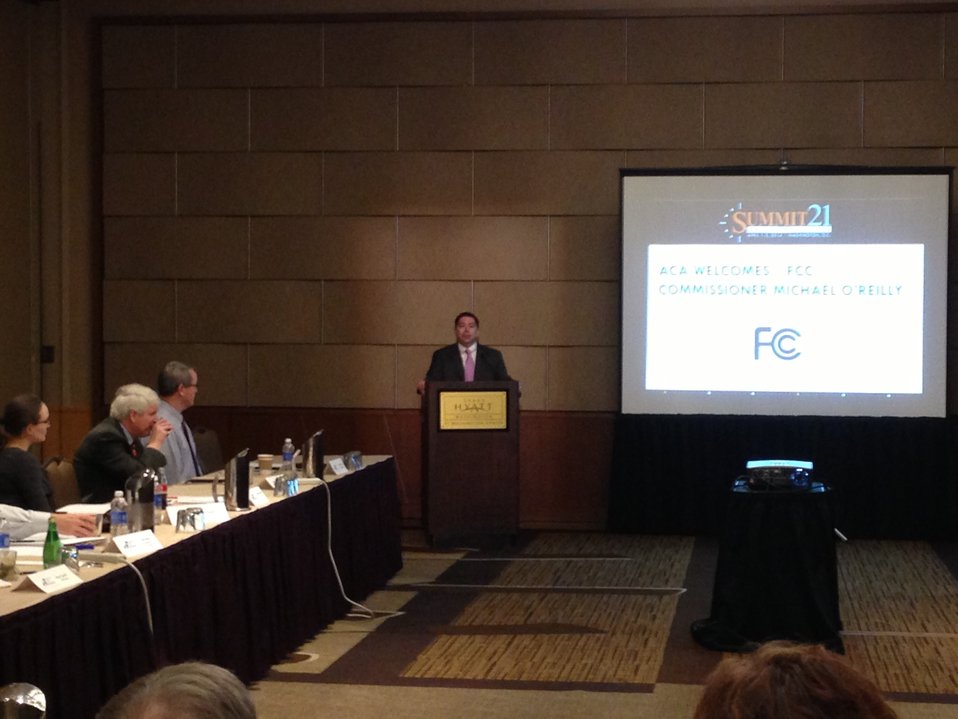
4.1.2014 American Cable Association Board Meeting

Commissioner O'Rielly at the American Cable Association Board Meeting, April 1, 2014